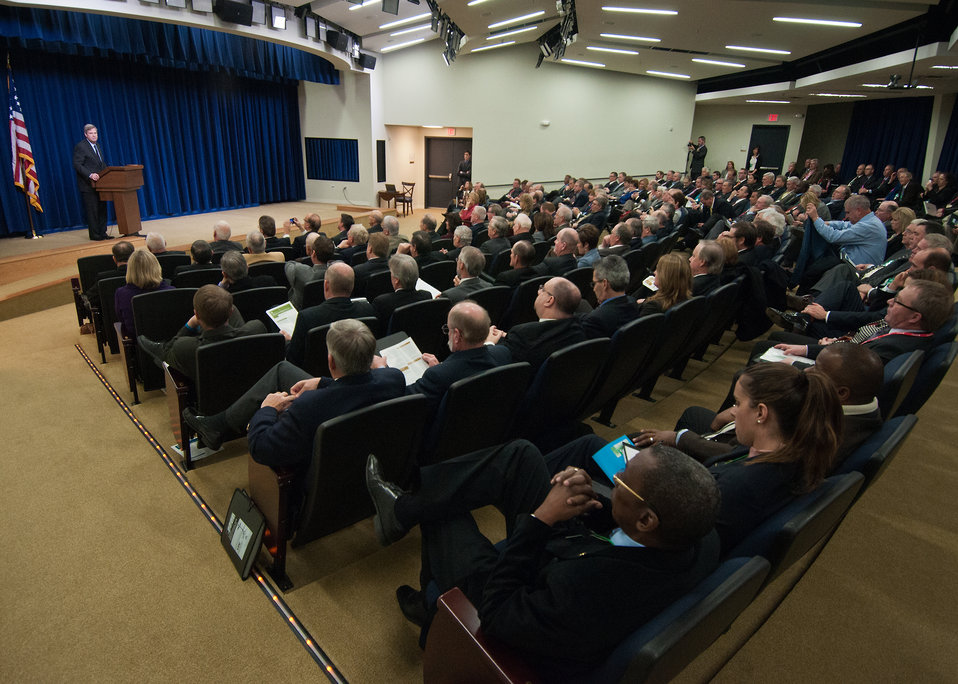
Agriculture Secretary Tom Vilsack spoke to the 11th Annual Meeting of State Agriculture and Rural Leaders at the Eisenhower Executive Office Building in Washington, D.C., on Friday, January 6, 2012. Accompanying Secretary Vilsack were members of his subcabinet, Dr. Elisabeth Hagen, Undersecretary, Food Safety, Dr. Catherine Woteki, Chief Scientist, Undersecretary, Research Education and Economics, Dave White, Chief, Natural Resources Conservation Service and Doug O’Brien, Deputy Undersecretary, Rural Development. Secretary Vilsack and his cabinet members discussed a variety of agriculture and rural development topics affecting rural America.